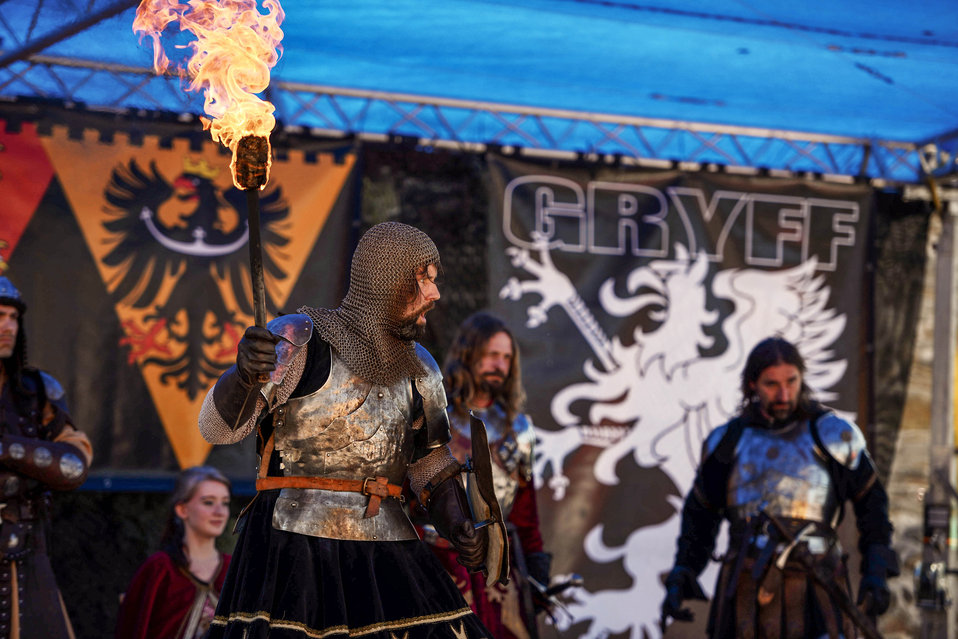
Knight duel.